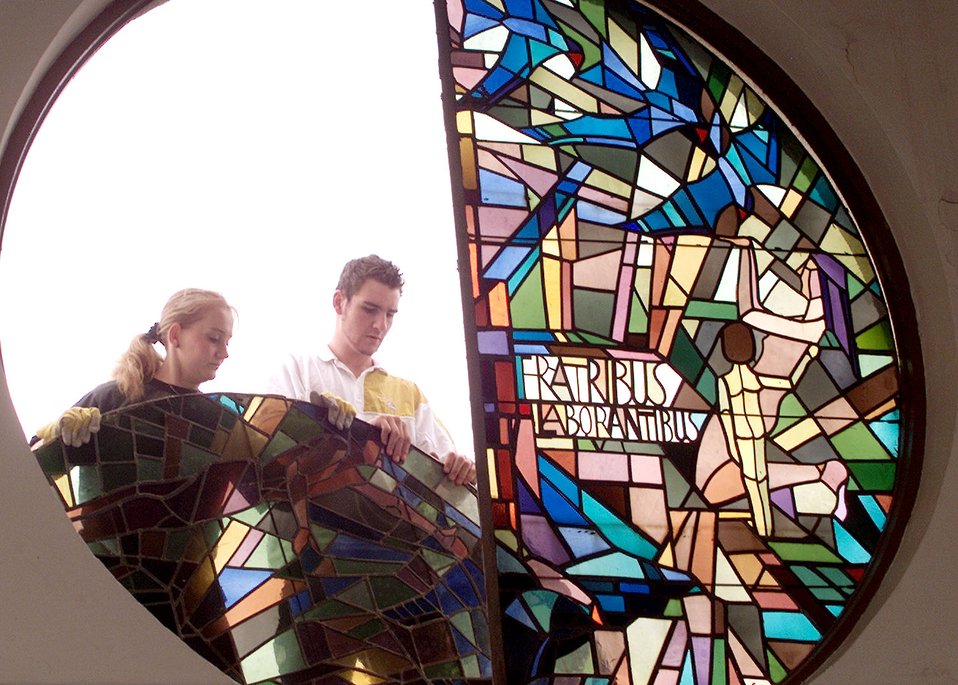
Piece of Rhein-Main history gets new home

RHEIN-MAIN AIR BASE, Germany -- Workers with a local glass studio remove the Berlin Airlift Memorial Window from the base chapel Aug. 2. The memorial honors the U.S. servicemembers who lost their lives during the Berlin Airlift in 1948 to 49. Following restoration work, the window will find a new home in nearby Ramstein Air Base's passenger terminal as the